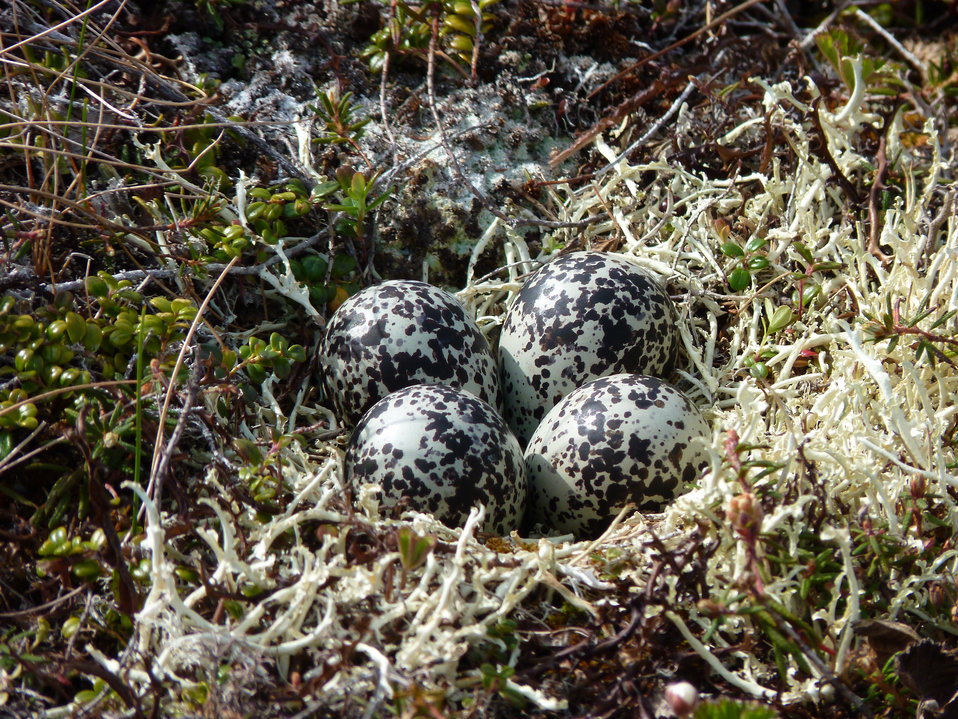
Pacific Golden-Plover nest

Andreafsky wilderness, Yukon Delta National Wildlife Refuge